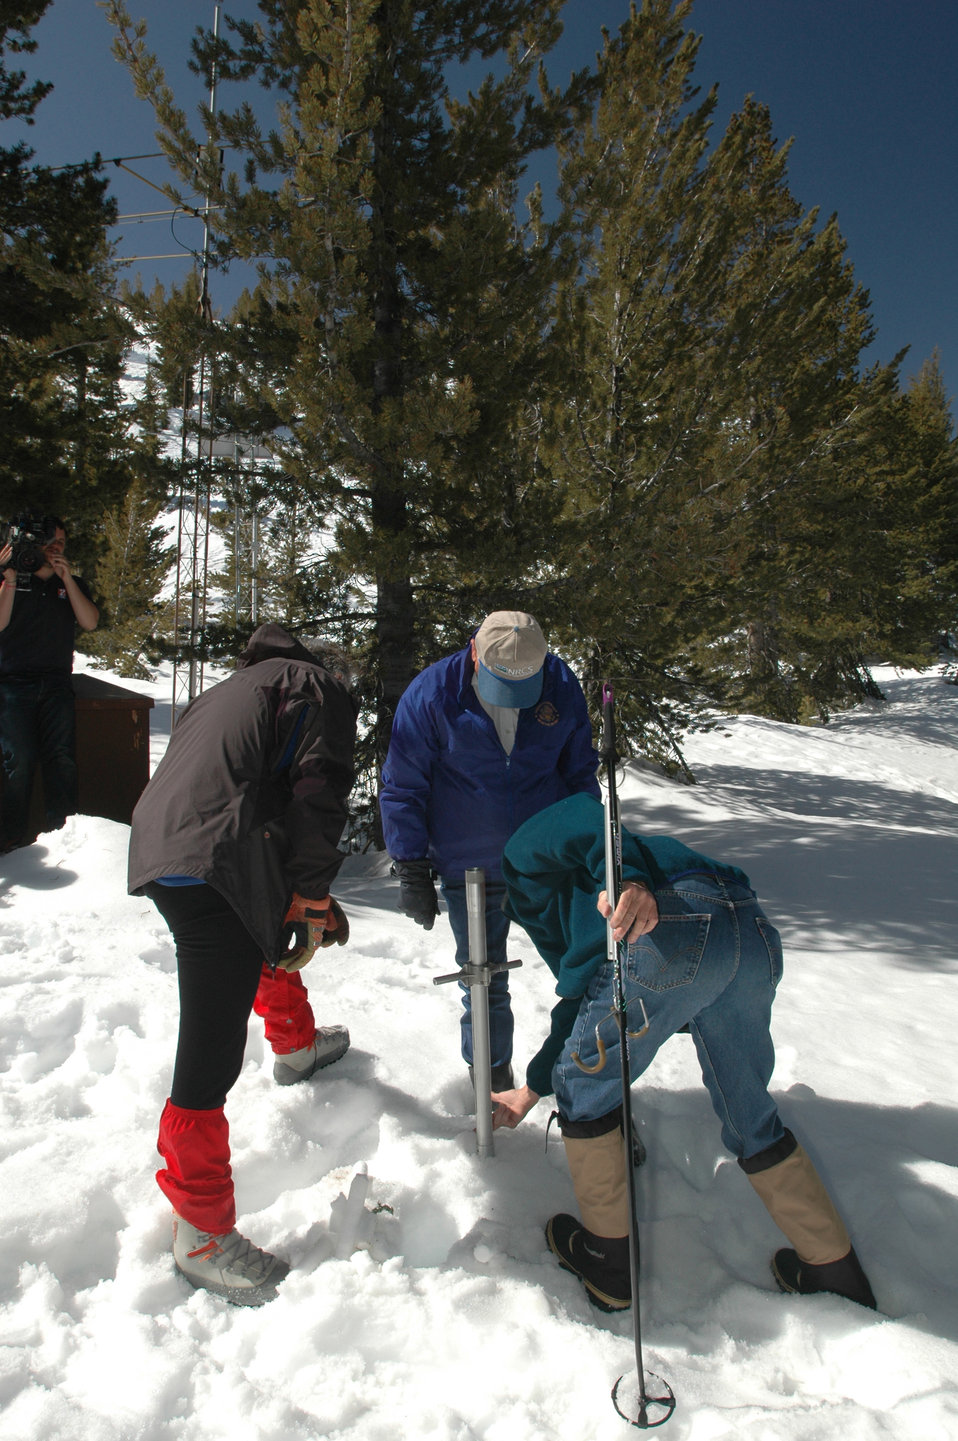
Scientists from the Federal, State, and private cooperative snow survey program directed by the U.S. Department of Agriculture's (USDA) Natural Resources Conservation Service (NRCS) sample the snow pack in Nevada on May 2, 2006. Snow plays a vital role in the lives of the citizens who live in the Western U.S. as a primary source of the water supply. The West's high mountain ranges hold a vast snowpack that provides 50 to 80 percent of the year's water supply and nature cannot be relied upon to provide an uninterrupted, dependable supply of meltwater to meet all the downstream requirements. The successful management of the West’s water supply begins with knowledge of the primary source of water in the West: snow.